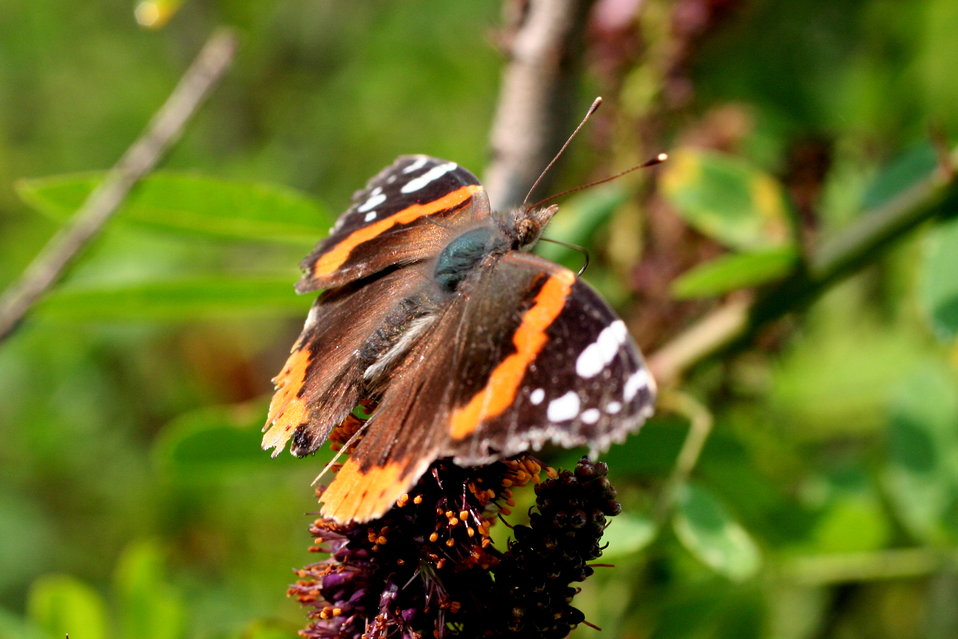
Red admiral butterfly on false indigo bush.